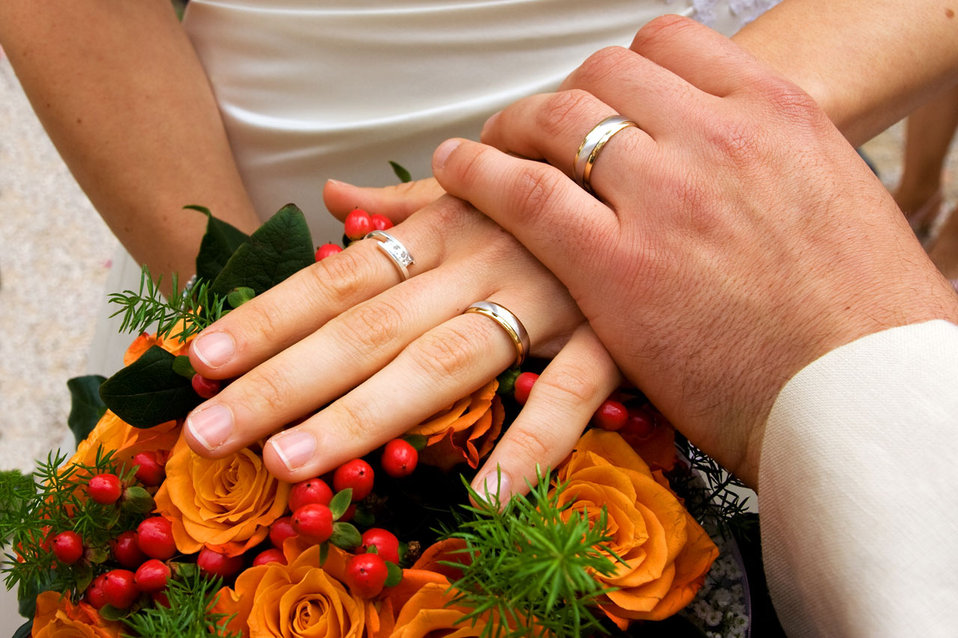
Rings

Wedding rings on fingers.